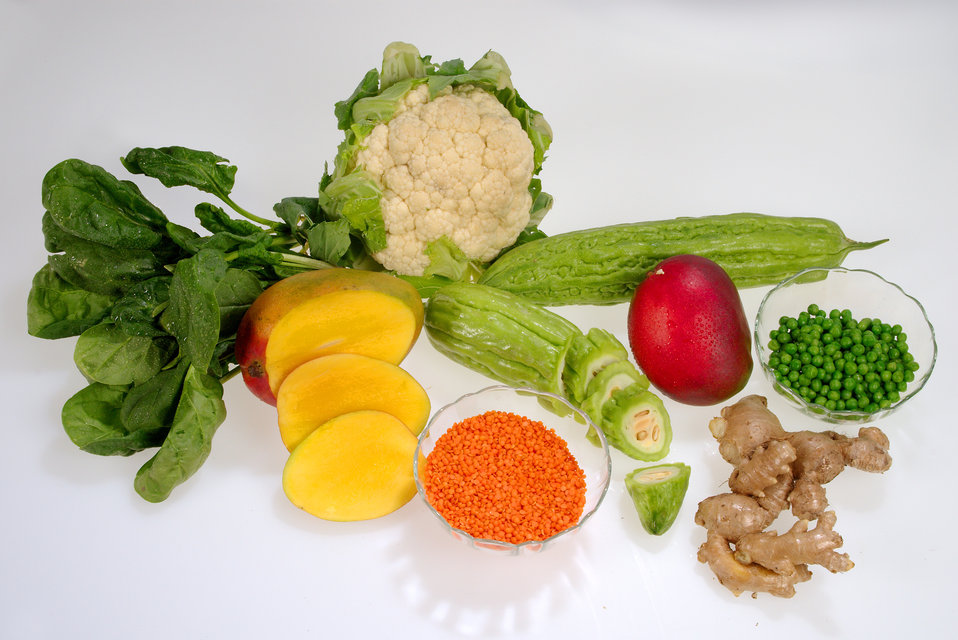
This image depicts a grouping of healthy fruits and vegetables, including a head of cauliflower, a bunch of spinach, a mango, bitter melon, ginger root, green peas, and a bowl of lentils.